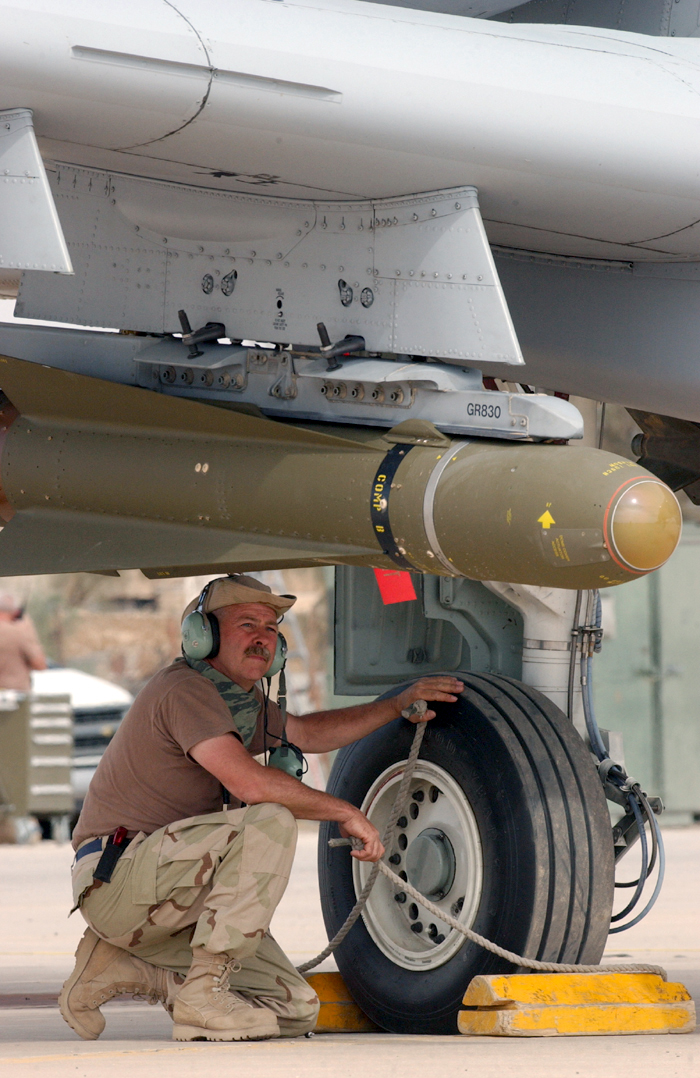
Launching the A-10

OPERATION IRAQI FREEDOM -- Tech. Sgt. Bill Stuart assists with launching an A-10 Thunderbolt II on a combat mission over Iraq on April 18. He is an avionics technician assigned to the 442nd Fighter Wing from Whiteman Air Force Base, Mo. The unit is deployed to Tallil Air Base in southern Iraq.